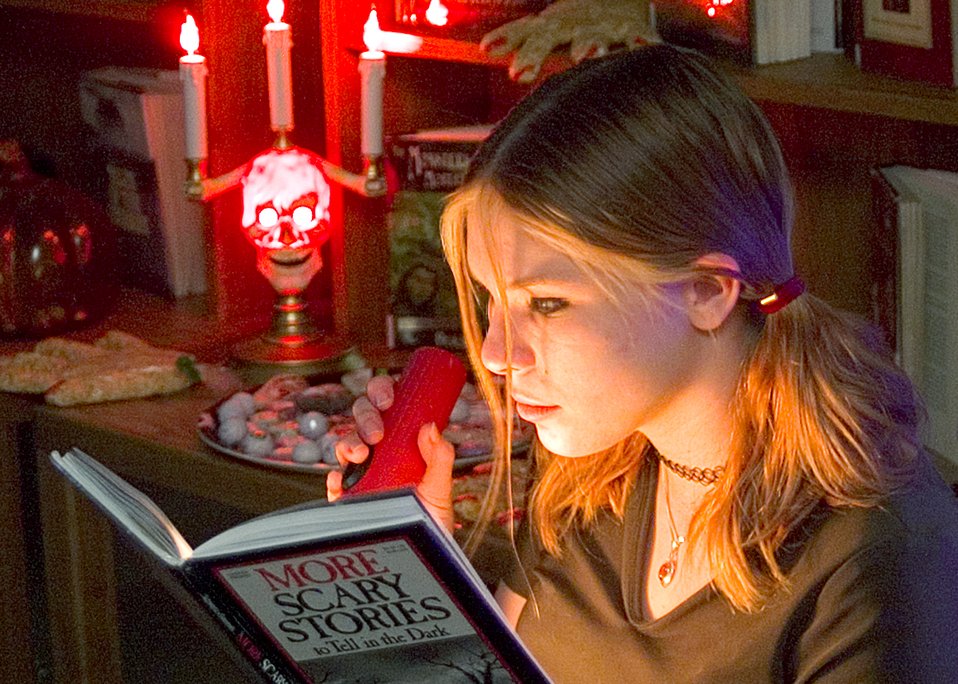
Haunted reading room spooks teens

EGLIN AIR FORCE BASE, Fla. -- Jennifer Bennett reads scary stories in the base library's haunted reading room here Oct. 21. The library staff created the haunted reading room as a part of the American Library Association's teen read week. This year's theme is